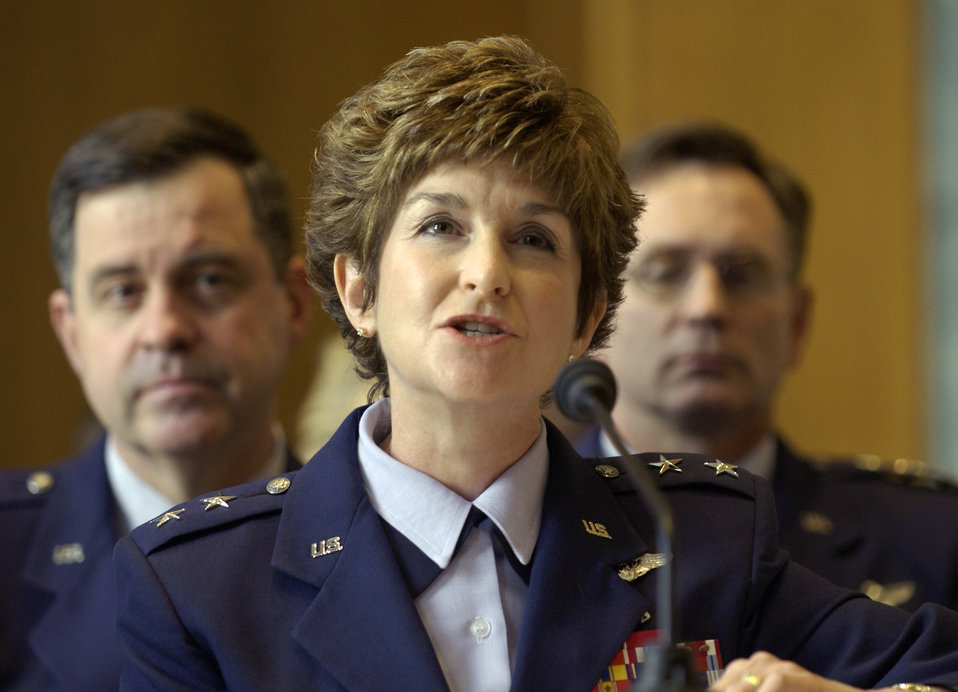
Nurses providing key support

WASHINGTON -- Maj. Gen. Barbara C. Brannon tells a Senate panel that Air Force nurses are providing tremendous support in operations Enduring Freedom and Iraqi Freedom, treating more than 200,000 patients throughout Southwest Asia.